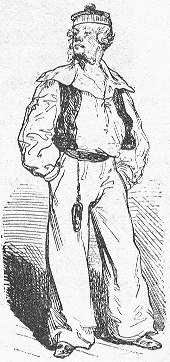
An illustration from Jules Verne's novel 'Journeys and Adventures of Captain Hatteras', part I: 'The English at the Noth Pole' drawn by Édouard Riou and/or Henri de Montaut. Polski: Ilustracja powieści Juliusza Verne'a 'Podróże i przygody kapitana Hatterasa', części I: 'Anglicy na Biegunie Północnym' autorstwa Édouarda Riou i/lub Henri de Montauta. Français : Jules Verne: 'Voyages et aventures du capitaine Hatteras - Les Anglais au Pôle Nord', Édouard Riou et Henri de Montaut.